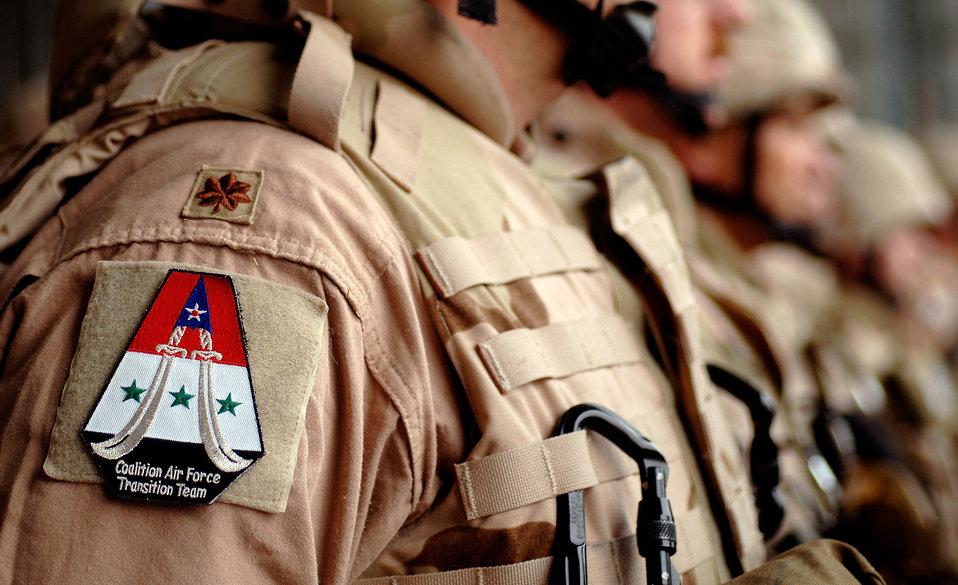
Operation Iraqi Freedom

Baghdad, Iraq -- A member of the Coalition Air Forces Transition Team wears the new CAFTT patch at the Unit Activation and Assumption of Command Ceremony for the 370th Air Expeditionary Advisory Group to be commanded by Col. Daniel G. Groeschen on New Al Muthana Air Base April 22..